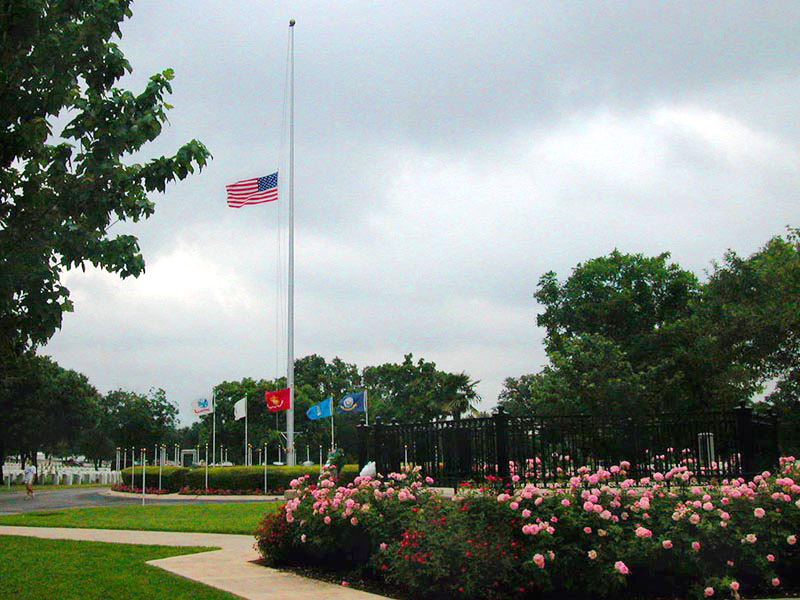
In honor of President Gerald R. Ford

The United States flag flies at half staff Dec. 28 at Fort Sam Houston, Texas, in honor of former President Gerald R. Ford, who died Dec. 26.